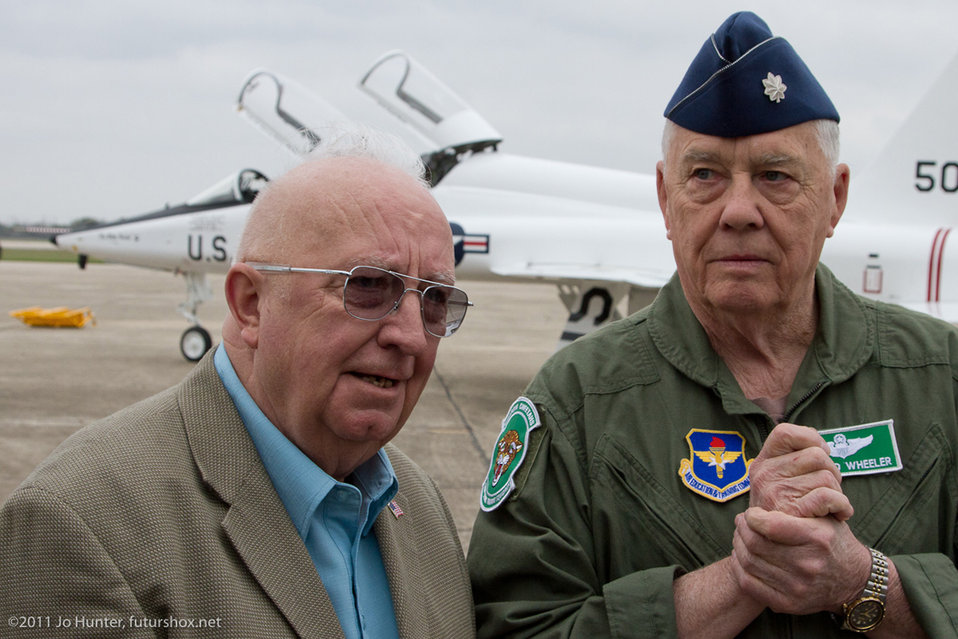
T-38

Retired Col. James Gibler (left) speaks with retired Lt. Col. Donald Wheeler March 17, 2011, at Randolph Air Force Base, Texas. In the background is a T-38 Talon. Colonel Wheeler was a member of the first class of pilots to train on the T-38. He graduated in 1962. Colonel Gibler was Colonel Wheeler's T-38 instructor. The two men had not seen each other for 49 years. This T-38 has been painted with a special commemorative color scheme, giving the plane an appearance similar to its original 1961 look.